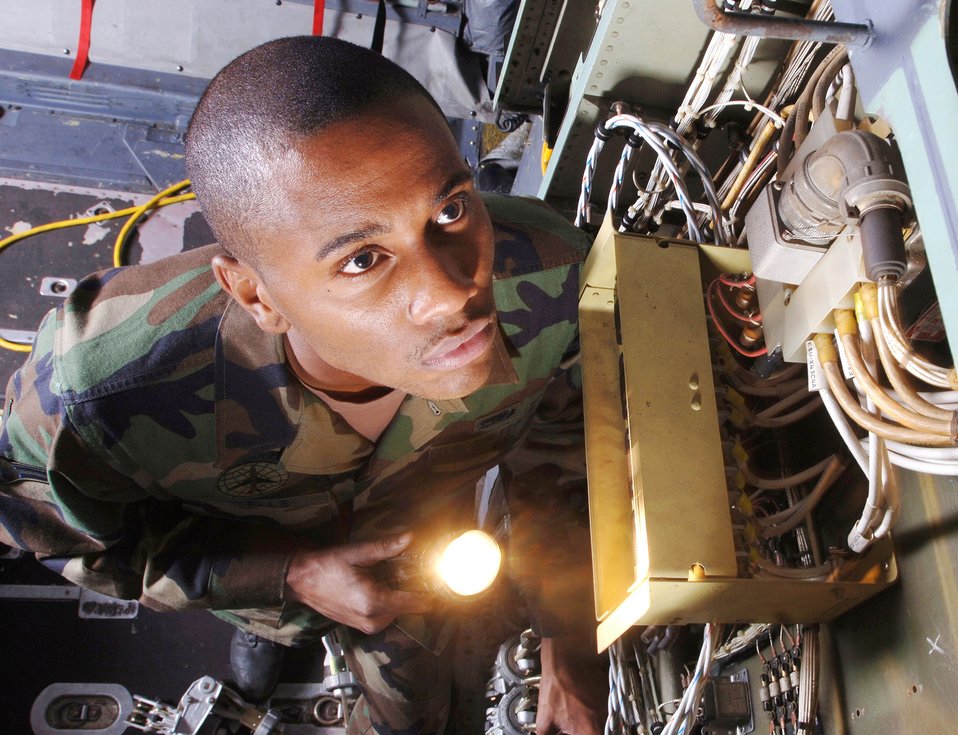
Avionics check

YOKOTA AIR BASE, Japan (AFPN)- Airman 1st Class Marlon Wells uses a flashlight to visually inspect the avionics system in the cargo bay of a C-130 Hercules aircraft here. Airman Wells is looking for chaffed, frayed and disconnected wires to prevent system failure. He is a C-130 crew chief from the 374th Maintenance Squadron/ isochronal section, here at Yokota Air Base, Japan.